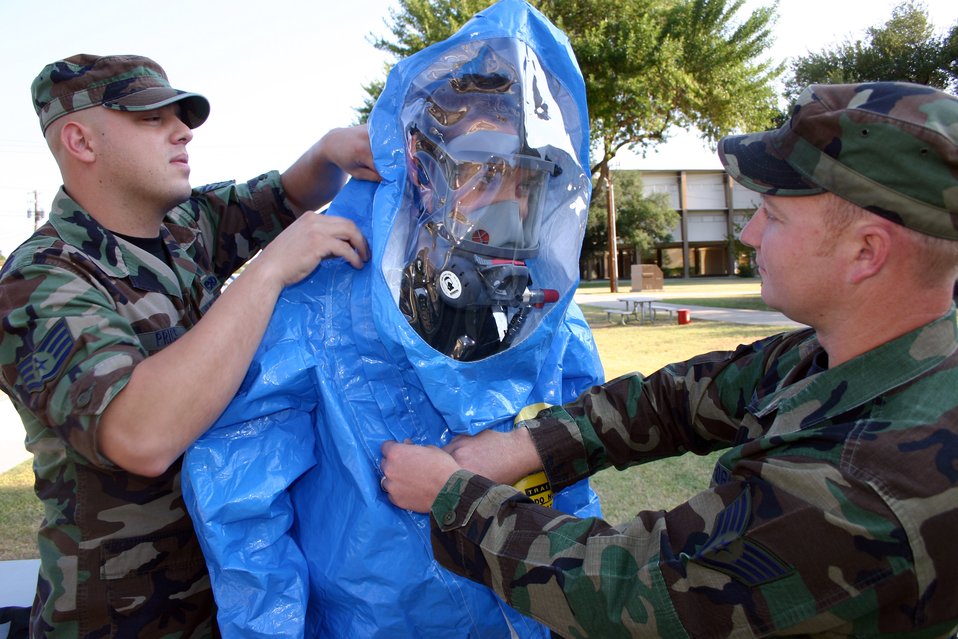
Suiting up

Staff Sgts. Christopher Price (left) and Chad Brock help Airman 1st Class Corey Hayes into a hazardous-material suit, so he can respond to a simulated toxic industrial spill at Lackland Air Force Base, Texas, on Wednesday, June 28. The suit is worn when responding to a possible chemical, biological, radiological, nuclear or high-yield explosive attack. The Airmen are bioenvironmental engineer apprentices with the 59th Medical Wing.